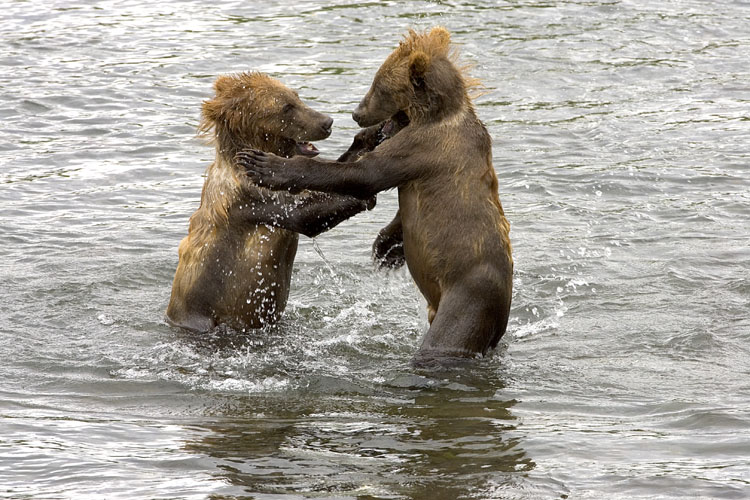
Kodiak Brown Bears

Playful Kodiak Bears